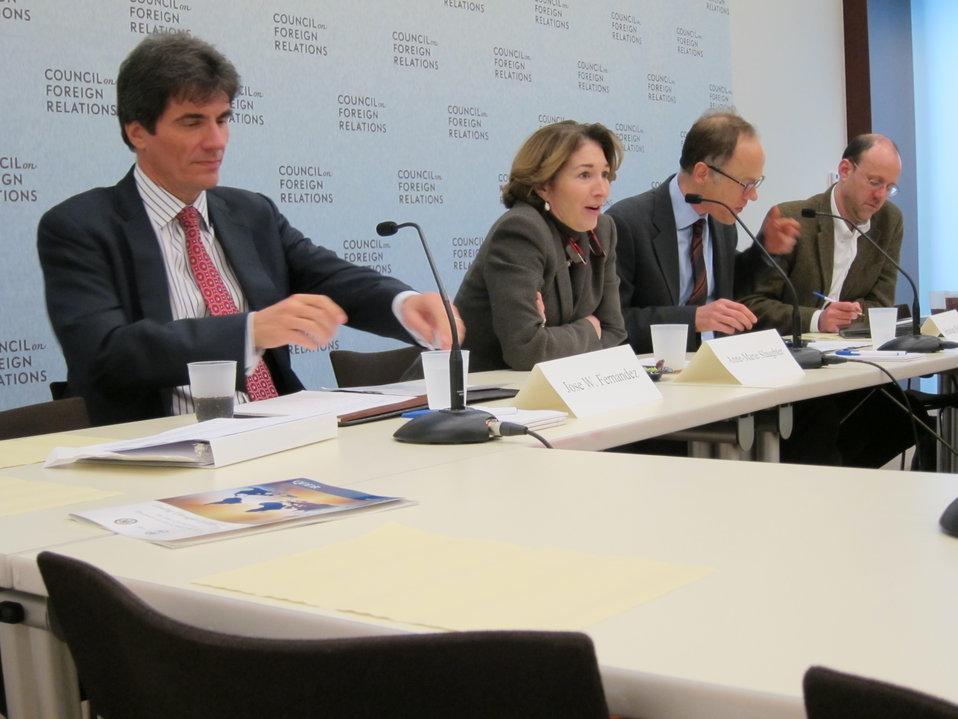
Assistant Secretary Fernandez Participates in a Roundtable Discussion

Assistant Secretary of State for Economic, Energy and Business Affairs Jose Fernandez participates in a roundtable discussion at the Council on Foreign Relations (CFR) in Washington, D.C., on January 12, 2011.